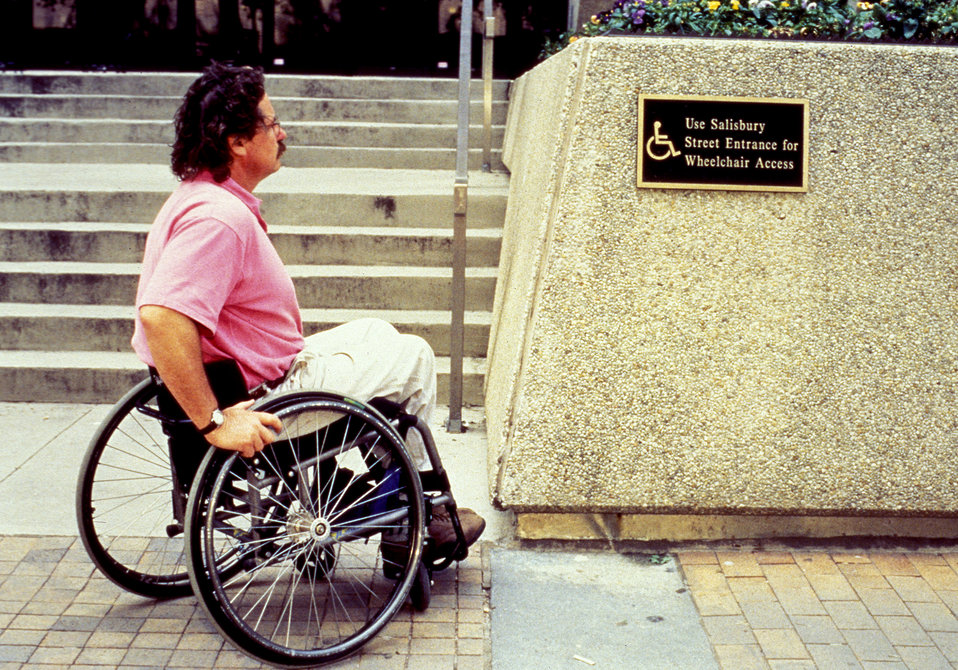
The wheelchair-seated man depicted in this photograph, whose mobility had been reduced, was shown reading a sign indicating to him that wheelchair access was provided via another entrance to the facility. Note the exterior stairs denying him access at this entrance point. This was one of a series of images provided by North Carolina State University's Center for Universal Design. Though the sign used the 'international symbol of accessibility', it lacked any directional arrows indicating the proper route to travel. Therefore, not only was he forced into a longer travel route, but he was also not sure as to which way to proceed.